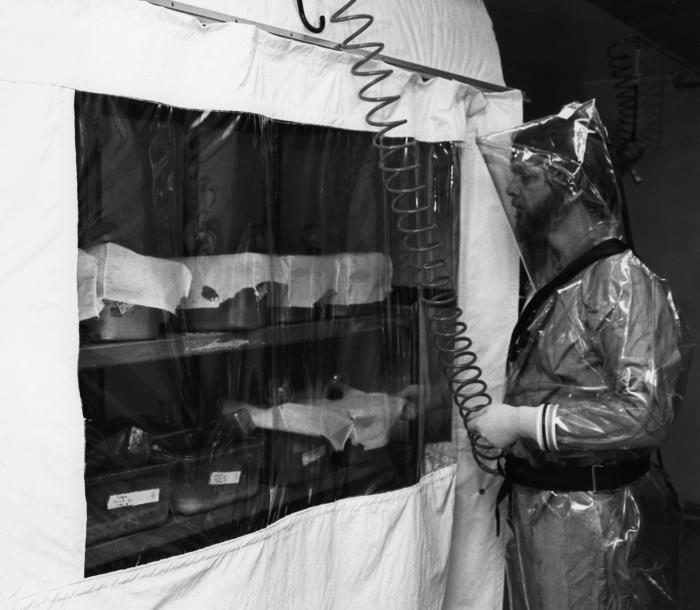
This 1978 photograph showed former Chief of the Centers for Disease Control's Special Pathogens Branch, Dr. Karl M. Johnson within one of the earlier BSL-4 Maximum Containment Labs.